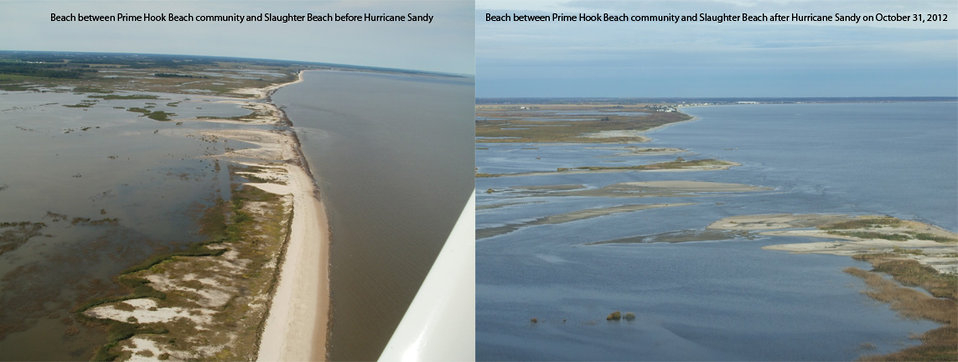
Hurricane Sandy impacts Prime Hook National Wildlife Refuge (DE)

Prime Hook National Wildlife Refuge experienced extensive flooding during Hurricane Sandy. This photo shows a before and after of the beach between the Prime Hook Beach community and Slaughter Beach.